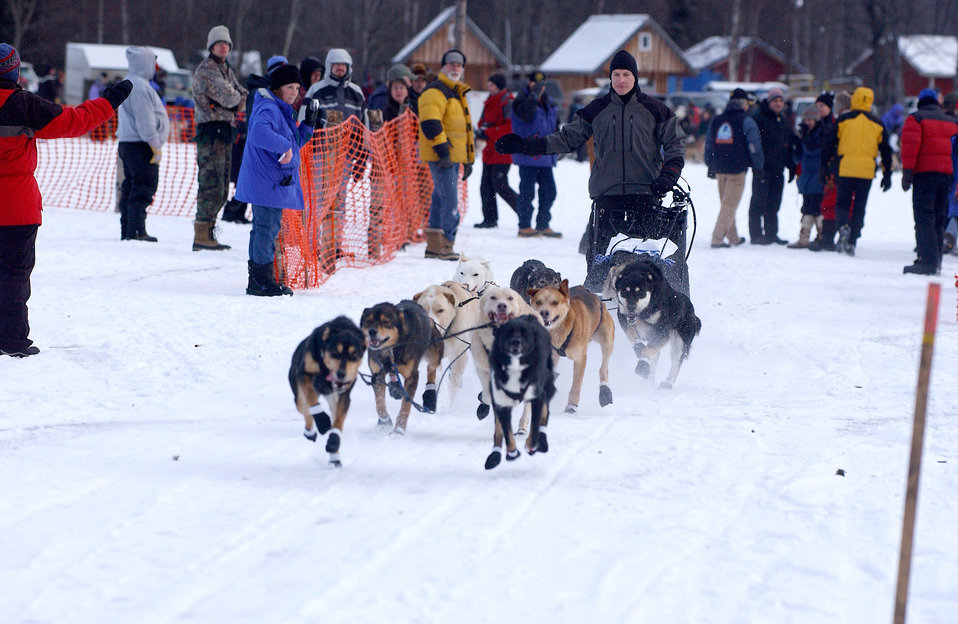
Winter race

KNIK, ALASKA (AFPN) -- Maj. Tom Knolmayer waves to spectators at the start of the Knik 200 Sled Dog Race. Major Knolmayer and his nine-dog team finished the 200 mile race in 25 hours and 43 minutes, including a mandatory six hour rest stop for the dogs. The major was the first active-duty military member to complete the 1,100 mile Iditarod Sled Dog Race last year. He is planning to compete in this years' Iditarod. Major Knolmayer is the 3rd Medical Group's chief of surgery at Elmendorf Air Force Base, Alaska.